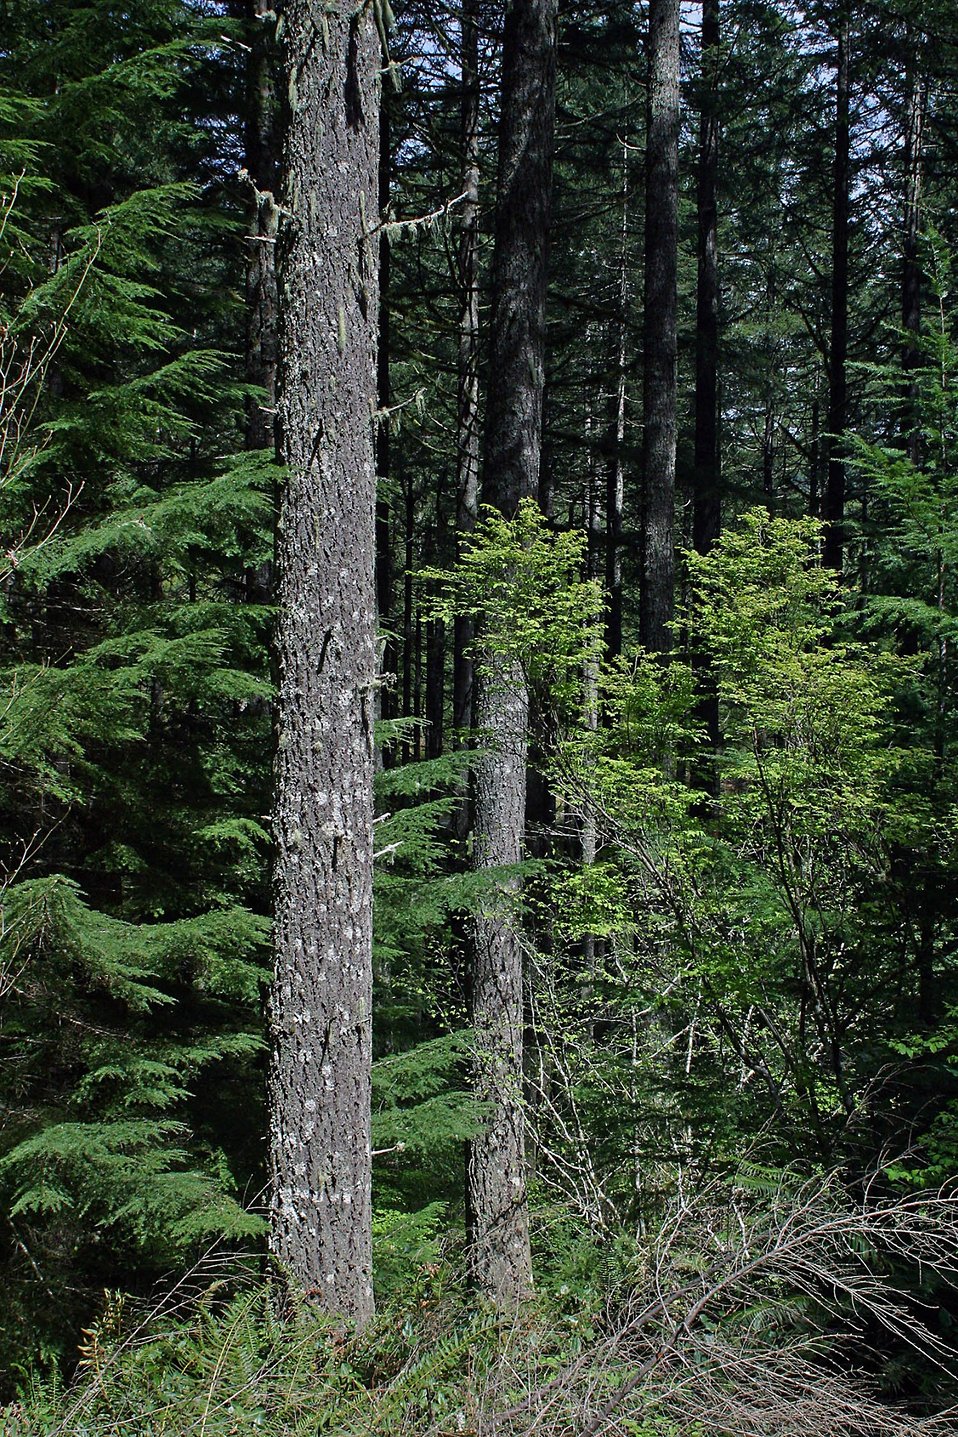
BLM forest lands in the Santiam watershed.